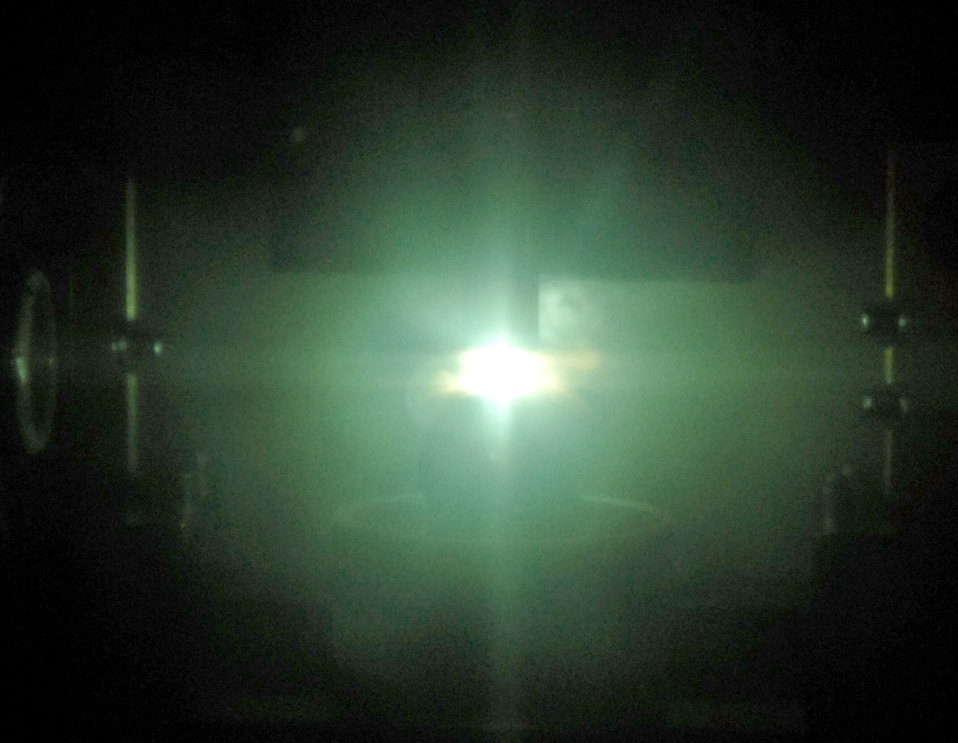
Hunting for hidden damage

A spectrometer reads a sample of jet engine oil from a Joint STARS to check for contaminating elements or metal fragments May 14 at an air base in Southwest Asia. Non-destructive inspectors with the 379th Expeditionary Maintenance Squadron operate the test equipment.